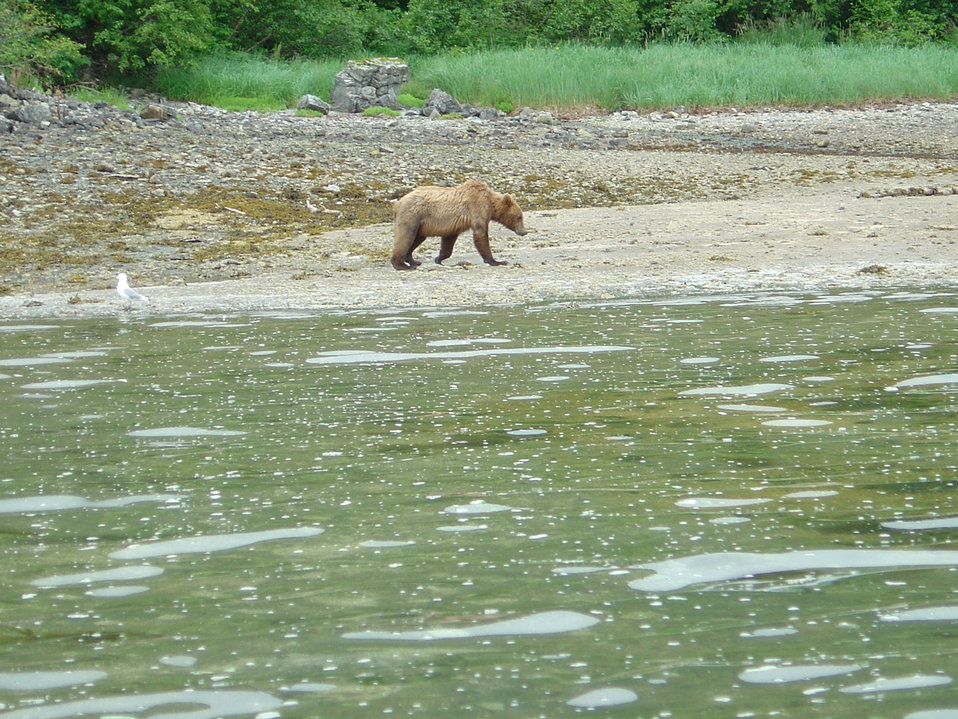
Young Alaska Brown Bear (Ursus arctos) strolling on the beach.